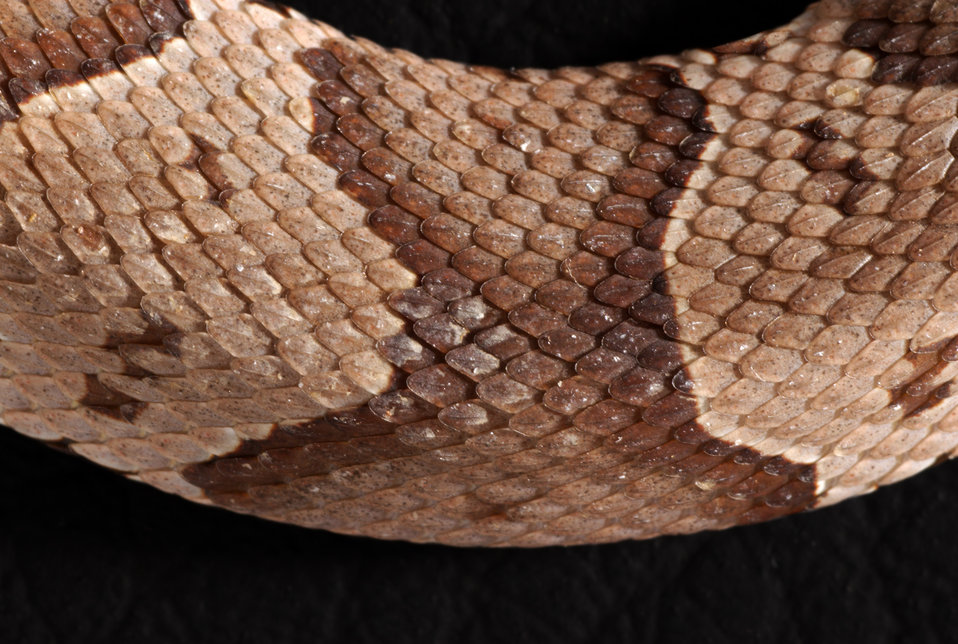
From a closer perspective, this 2008 photograph revealed a detailed view of a juvenile venomous 'Southern copperhead' snake's, Agkistrodon contortrix, skin surface, which was found coiled in a Decatur, Georgia basement.